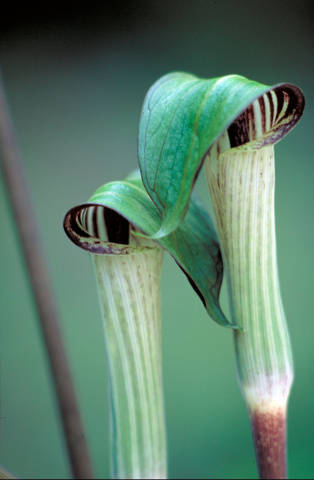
Jack in the pulpit